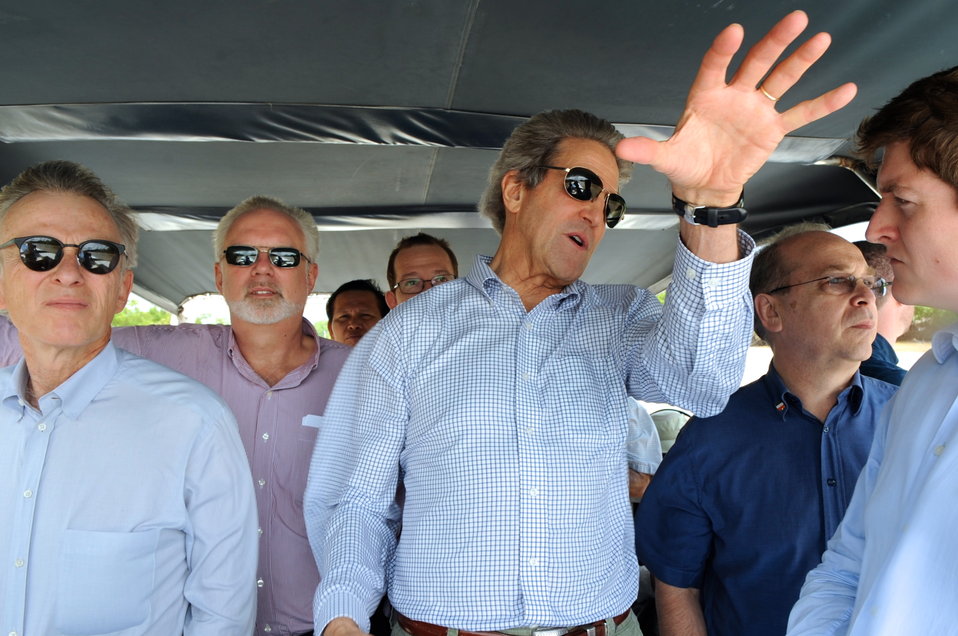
Secretary Kerry Tours Mekong River Delta

U.S. Secretary of State John Kerry, a Navy veteran of the Vietnam War, points out landmarks to his aides as he returns to the Mekong River Delta in Vietnam for a tour and climate change speech on December 15, 2013.